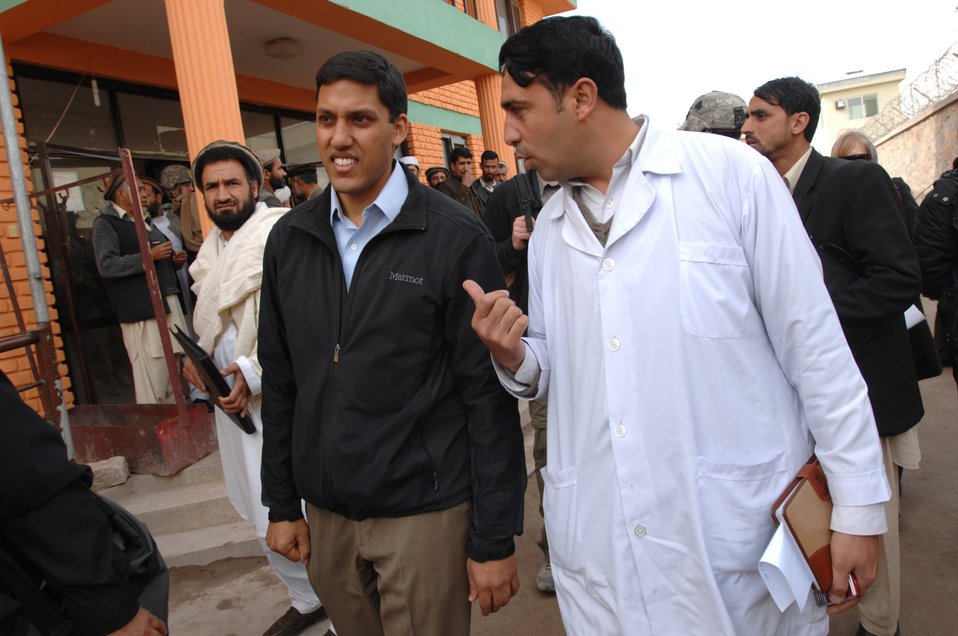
Dr. Shah Meets With Dr. Mahmood Dadman

Dr. Rajiv Shah, Administrator of the United States Agency for International Development (USAID), meets with local officials in Surkh Rod, Nangarhar province on Wednesday, February 9, 2011. (S.K. Vemmer/Department of State)